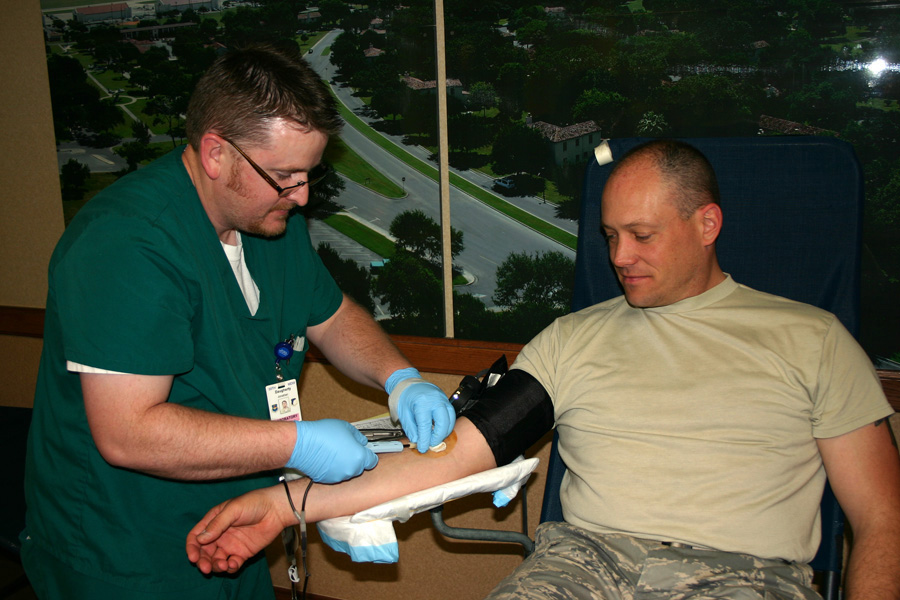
AFPC hosts blood drive to support warfighters

Phlebotomist Jonathan Dougherty draws blood from Maj. Lance Van Vleck, Air Force Personnel Center non-rated officer assignments, during a blood drive held at AFPC April 17 at Randolph Air Force Base, Texas. AFPC members gave more than 40 pints of blood that will be used to supply life-saving blood products to warfighters in Operation Iraqi Freedom and Operation Enduring Freedom. Mr. Dougherty is from the Blood Donor Center at nearby Lackland AFB, Texas